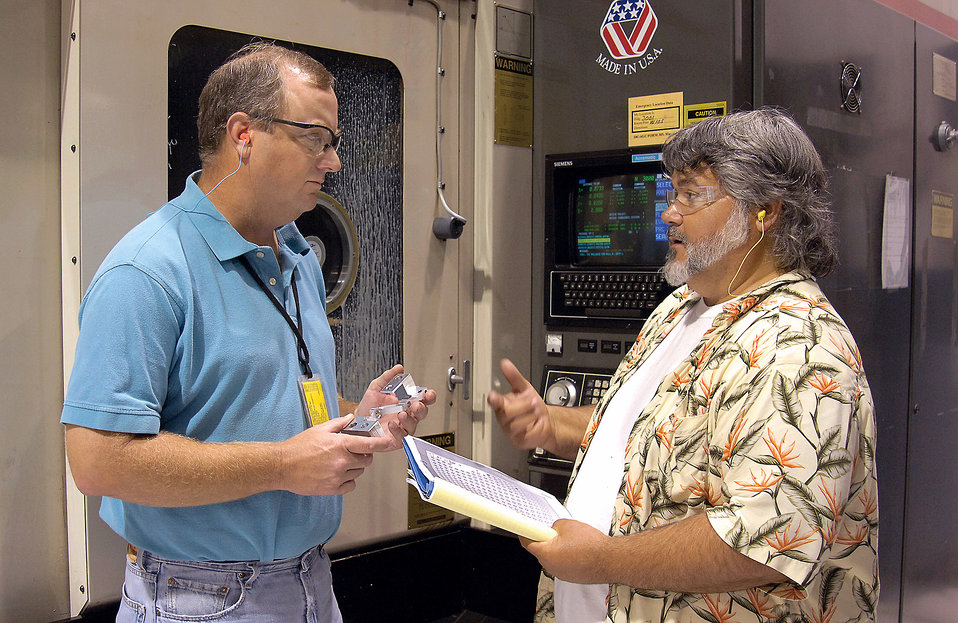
Teamwork among depots keeps T-38s flying

Numerical control programmer John Wilbanks (left) and machinist Michael Barnes discuss the T-38 Talon project while a milling machine behind them precisely carves a T-38 left aileron actuator lever from raw material at Tinker Air Force Base, Okla.